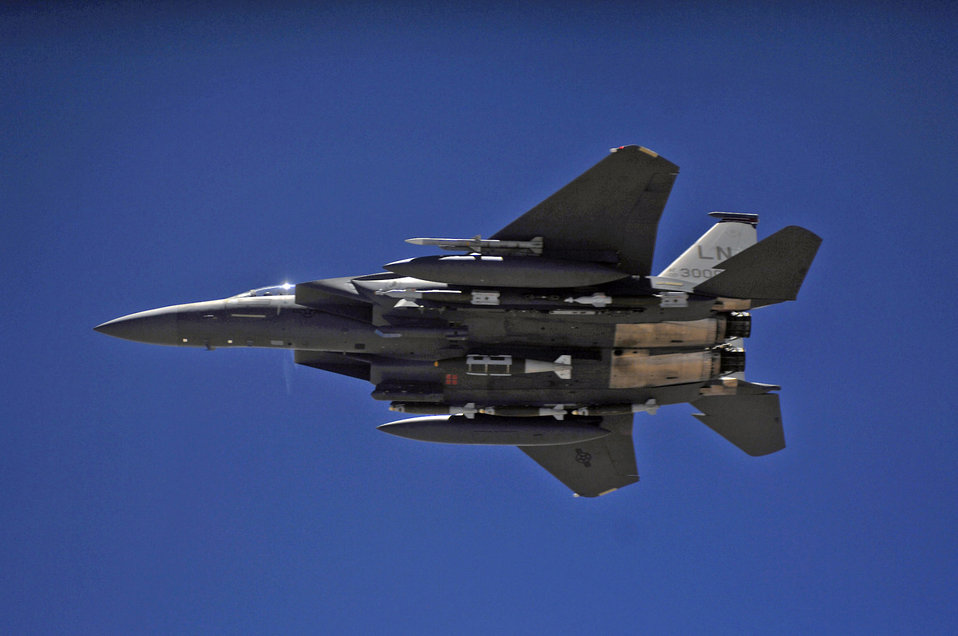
June 29 airpower summary: F-15Es bomb enemy rocket teams

An Air Force F-15E Strike Eagle aircraft waits for his wingman after receiving fuel during a mission over Afghanistan.